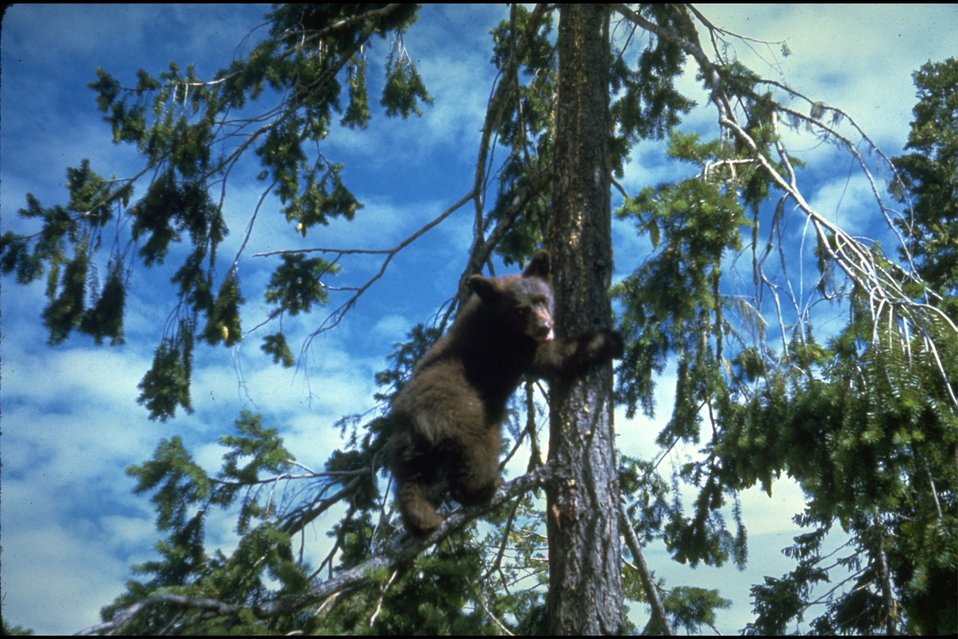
Rogue River - Black Bear.